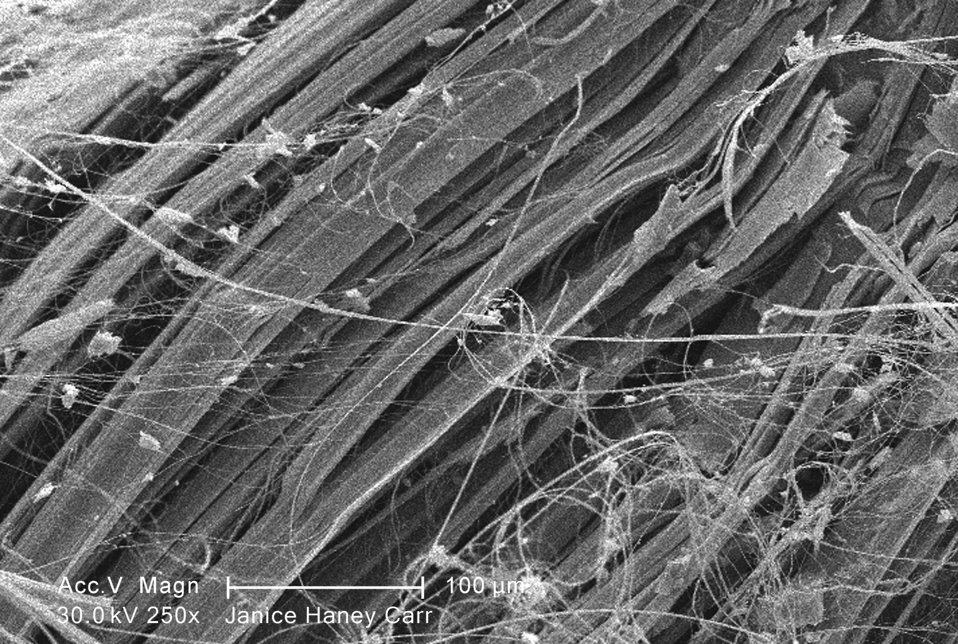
Under a moderate magnification of 250X, this scanning electron micrograph (SEM) revealed some of the microcrystalline ultrastructure exhibited by a piece of raw chrysotile, or white asbestos, which had been excavated from the Lowell Asbestos Mine on Belvidere Mountain, Vermont.